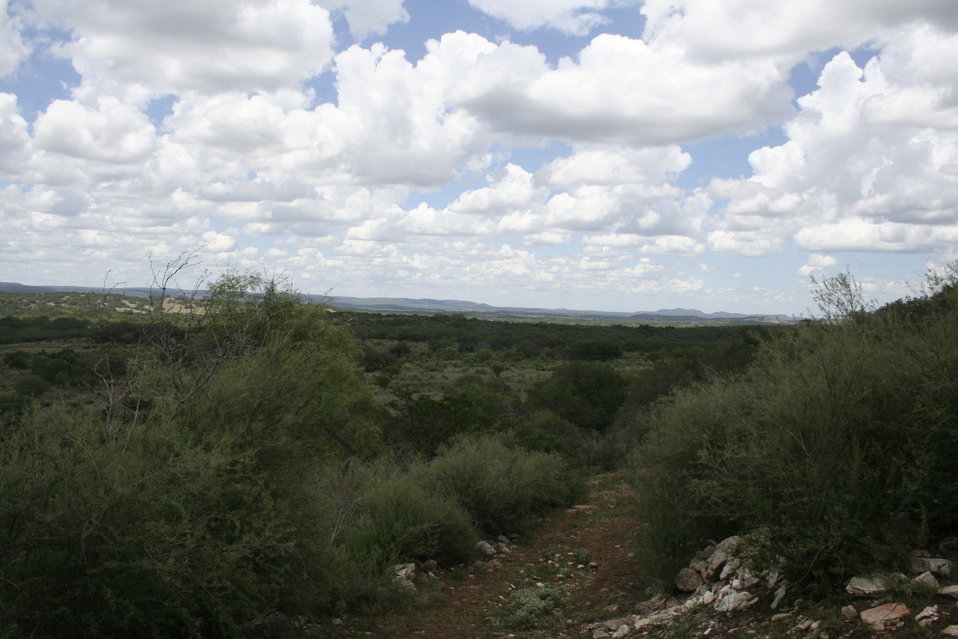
View from Davis Cave